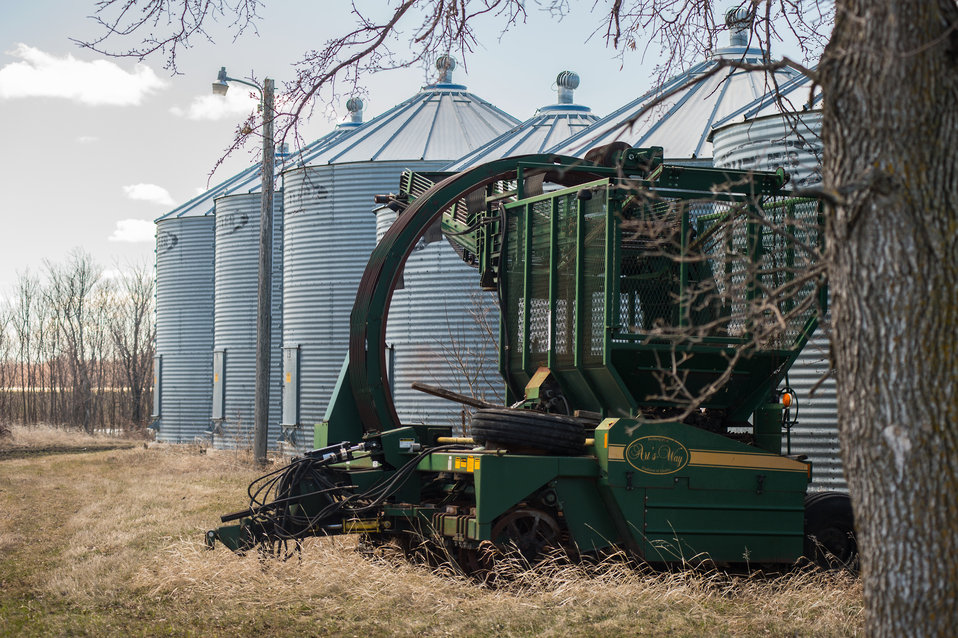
Bins and equipment at the Jeff Hoff farmstead in Perley, MN, on Tuesday, April 30, 2013. With the assistance of the U.S. Department of Agriculture (USDA), he was able to build up and modify an earthen dike that is currently holding back flood waters around his home, structures and farm equipment. To learn about the USDA Red River Basin Initiative, see www.mn.nrcs.usda.gov/news/features13/RRBI.html.